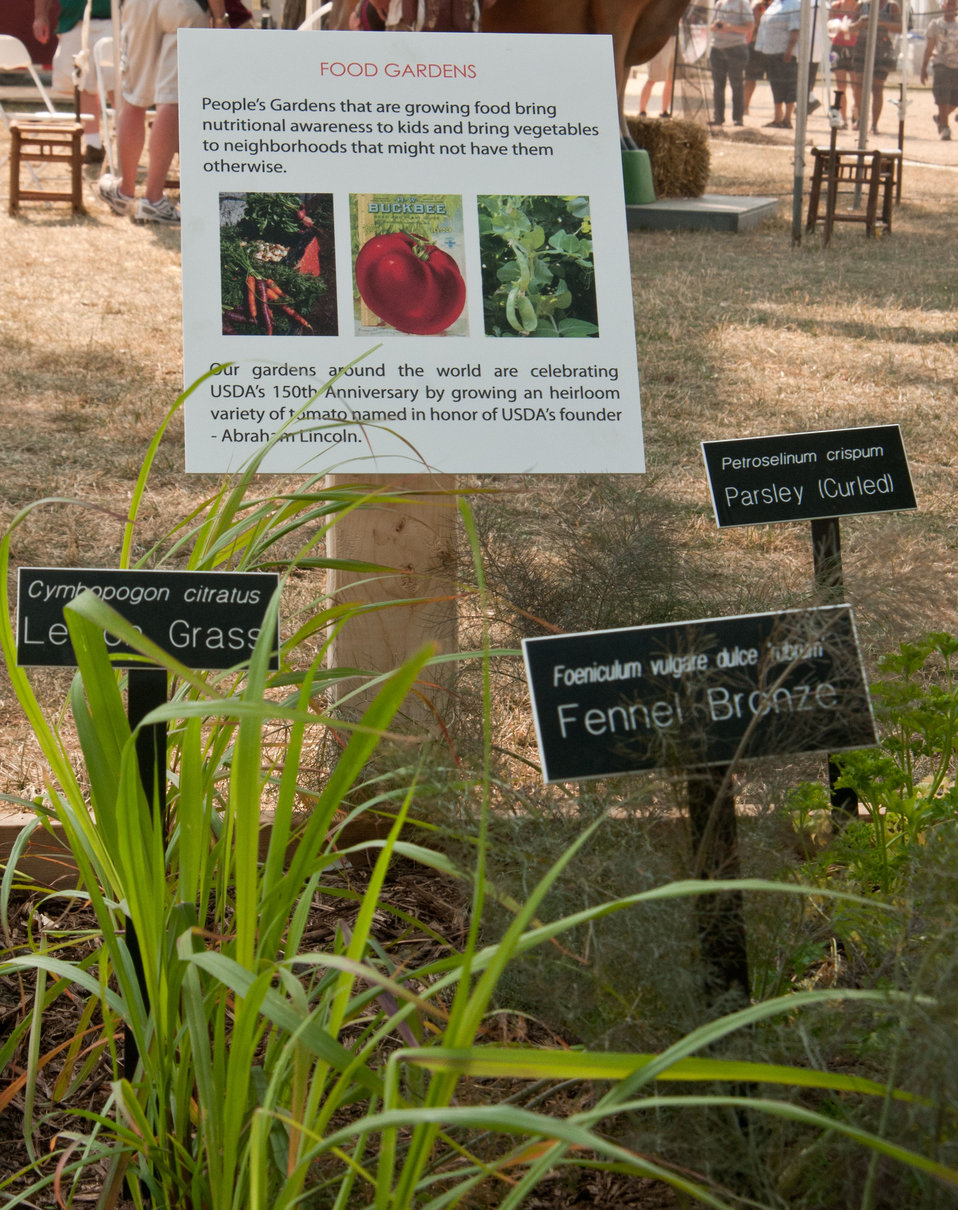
U.S. Department of Agriculture (USDA), People’s Garden Initiative incorporate and display sustainable practices that nurture, maintain and protect the environment at this living exhibit, during the 2012 Smithsonian Folklife Festival, on the National Mall in Washington, D.C., on Thursday, June 28, 2012. Gardens as small as these bring nutritional and food source awareness to kids and fresh fruits and vegetables to neighborhoods that might not have them otherwise. One of the three themes this year is “Campus and Community.” It celebrates the 150 years of the USDA and the Land-Grant University System. The U.S. Department of Agriculture (USDA) and the Land-Grant system extend education across the country, contributing to American agriculture success and rural prosperity. “Campus and Community” has demonstrations, discussions, hands-on activities, and entertainment to that showcase the many ways that this partnership works to improve American agriculture and rural life.